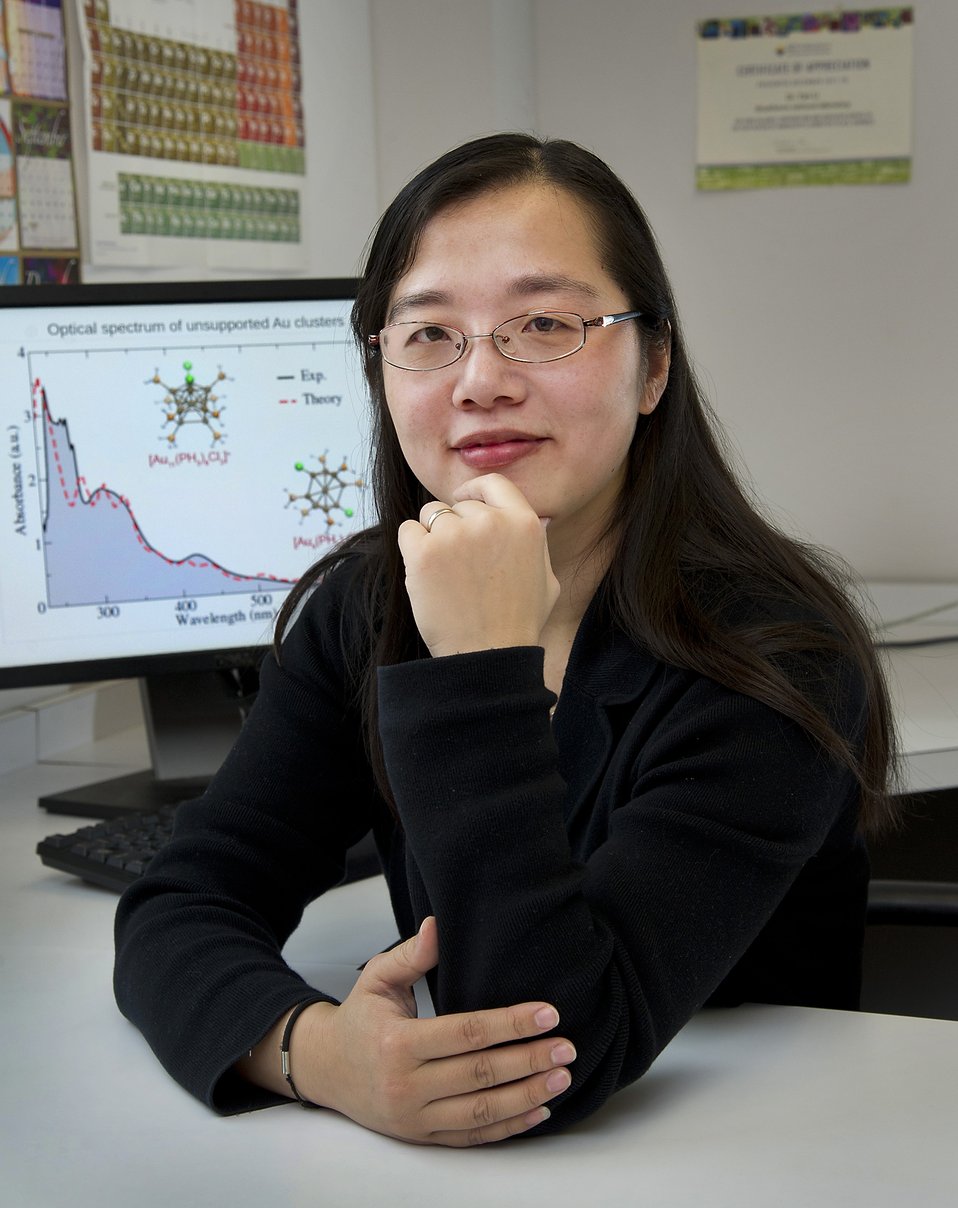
Yan Li is a Computational Physicist at the Computational Science Center at Brookhaven National Laboratory. Her work is mainly focused on developing and applying advanced computational tools to investigate material properties of crystal, surfaces/interfaces and nanostructures. Yan got her Ph.D in Physics from University of Illinois at Urbana-Champaign. Before becoming a staff scientist at BNL, Yan worked at the University of California, Davis as a postodoral researcher. Yan holds a Bachelors of Science in Physics from Peking University in China.

Read her full story at energy.gov/diversity/articles/women-energy-yan-li